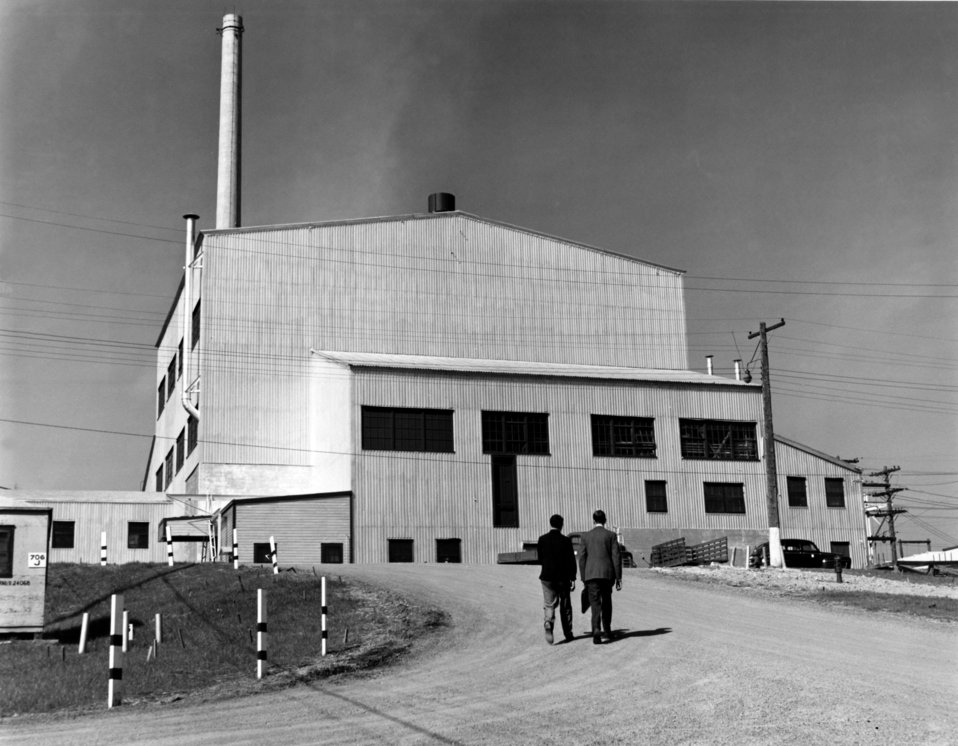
Exterior View of Graphite Reactor Oak Ridge

5471-5 DOE photo Ed Westcott 2-25-1949 ORNL Oak Ridge Tennessee